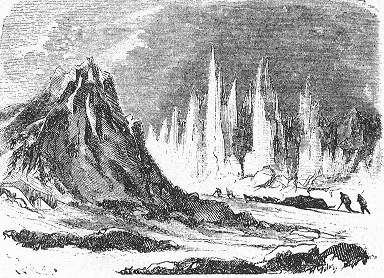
An illustration from Jules Verne's novel 'Journeys and Adventures of Captain Hatteras', part I: 'The English at the Noth Pole' drawn by Édouard Riou and/or Henri de Montaut. Polski: Ilustracja powieści Juliusza Verne'a 'Podróże i przygody kapitana Hatterasa', części I: 'Anglicy na Biegunie Północnym' autorstwa Édouarda Riou i/lub Henri de Montauta. Français : Jules Verne: 'Voyages et aventures du capitaine Hatteras - Les Anglais au Pôle Nord', Édouard Riou et Henri de Montaut.